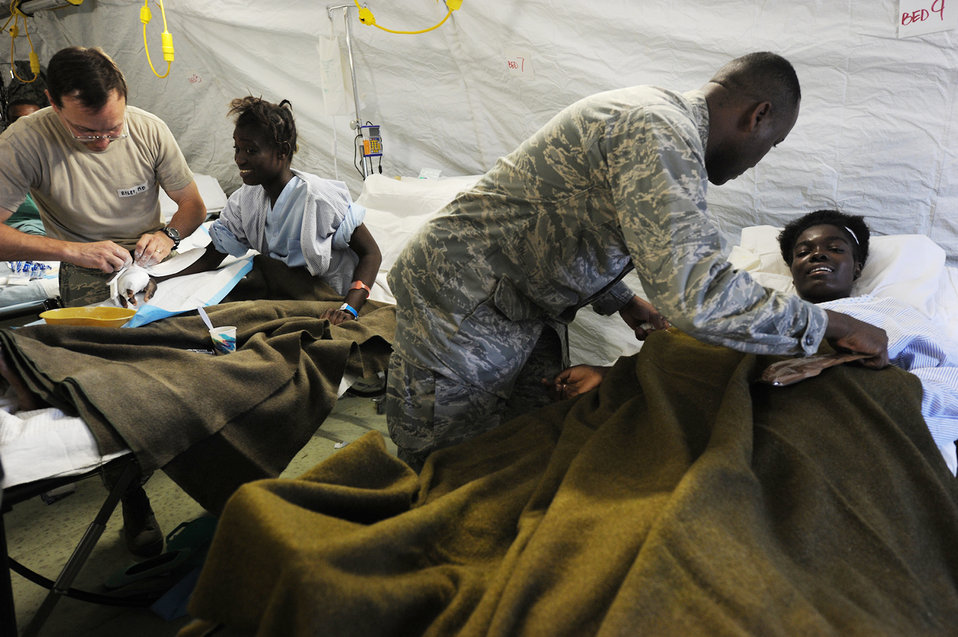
Airmen provide care, compassion to people of Haiti

Airmen from Travis Air Force Base, Calif., and Navy corpsman treat earthquake survivors at an expeditionary medical facility Feb. 3, 2010, located along the harbor of Port-au-Prince, Haiti. A 7.0-magnatude earthquake struck Haiti Jan. 12, leaving thousands of Haitians displaced and without access to food, water and vital medical care.